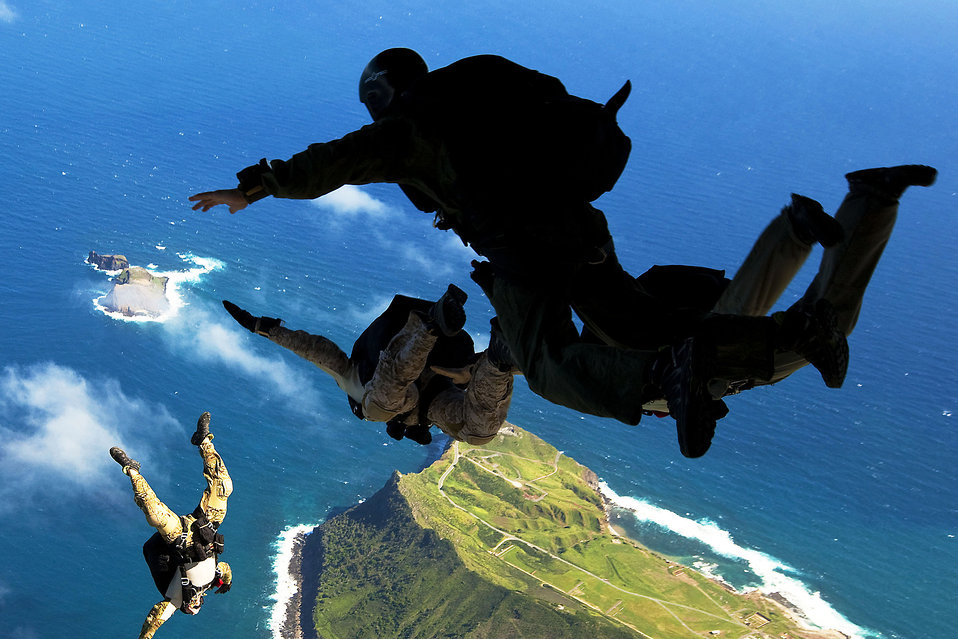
See you on the ground!

Air Force pararescuemen and Navy SEALs participate in free-fall parachute training Jan. 21, 2011, over Marine Corps Base Hawaii. The Airmen are assigned to the New York Air National Guard's 103rd Rescue Squadron. The SEALs are based on the West Coast.